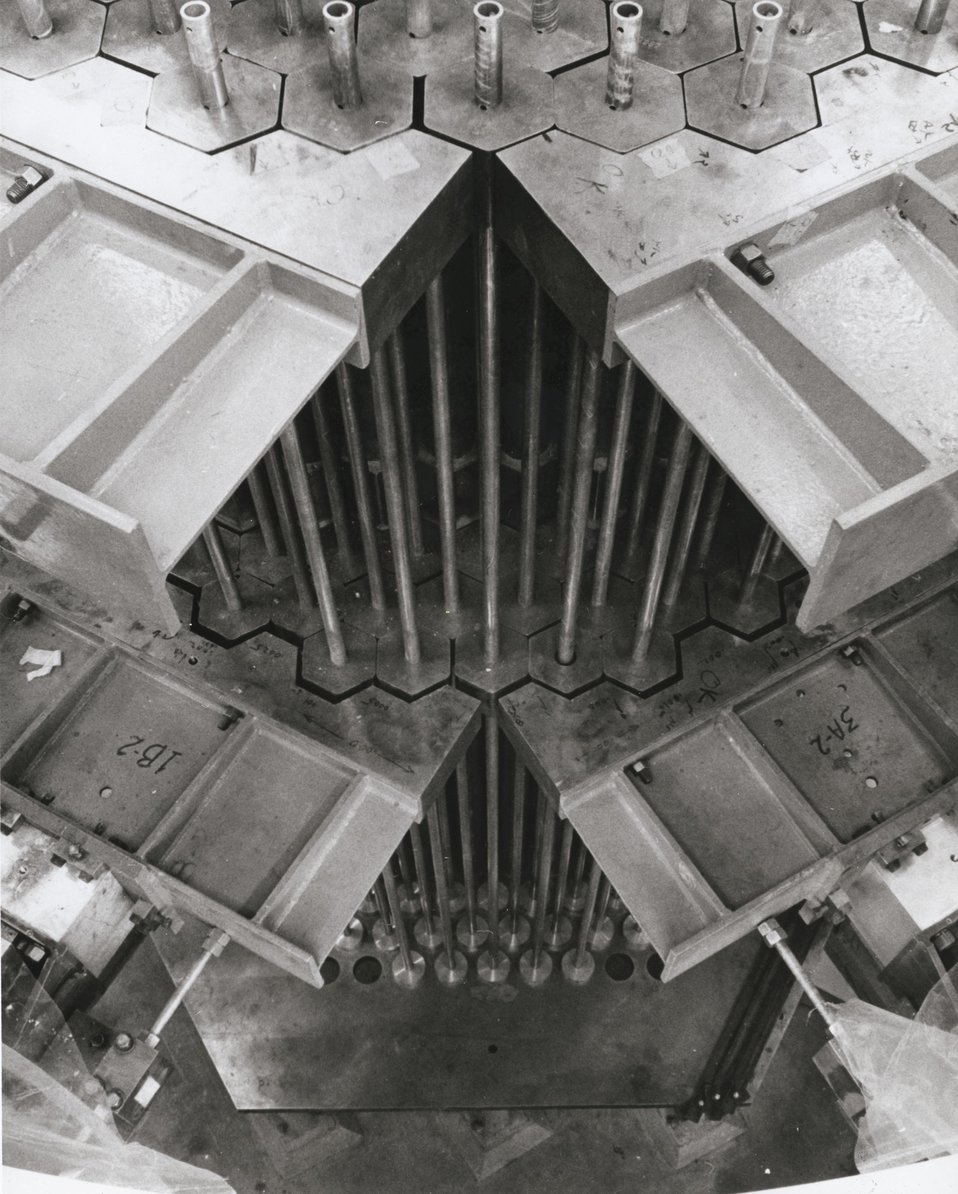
Core Compaction tests are underway at Hanford Engineering Development Lab in support of the Fast Flux Test Facility. c.1972